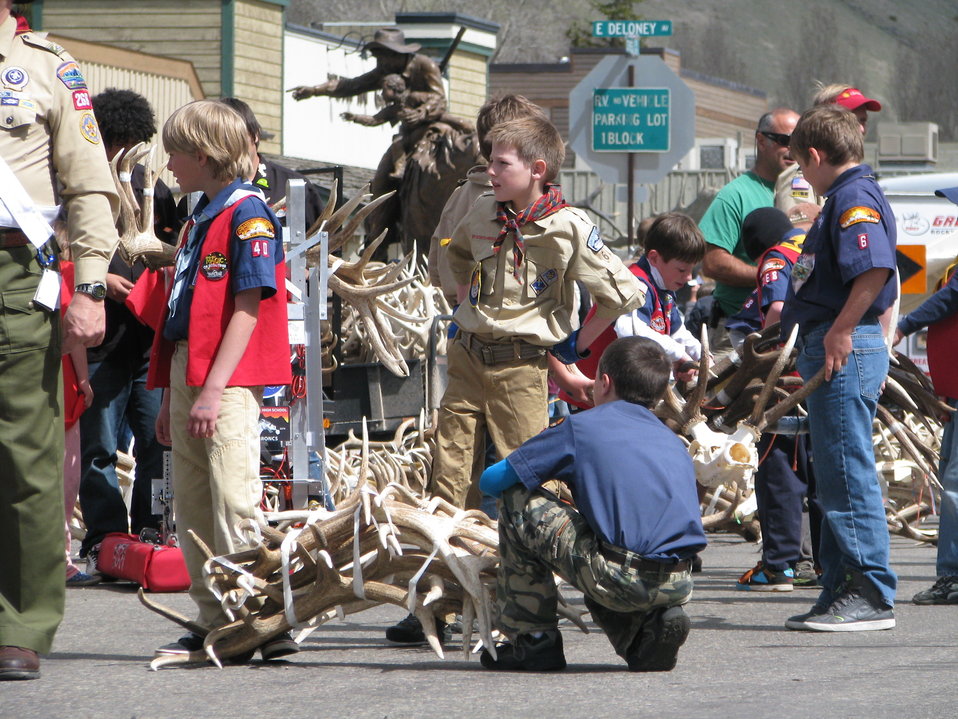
Ready for the Auction

Scouts line up near the stage, prepared to carry their assigned lot up to the stage to be auctioned off.